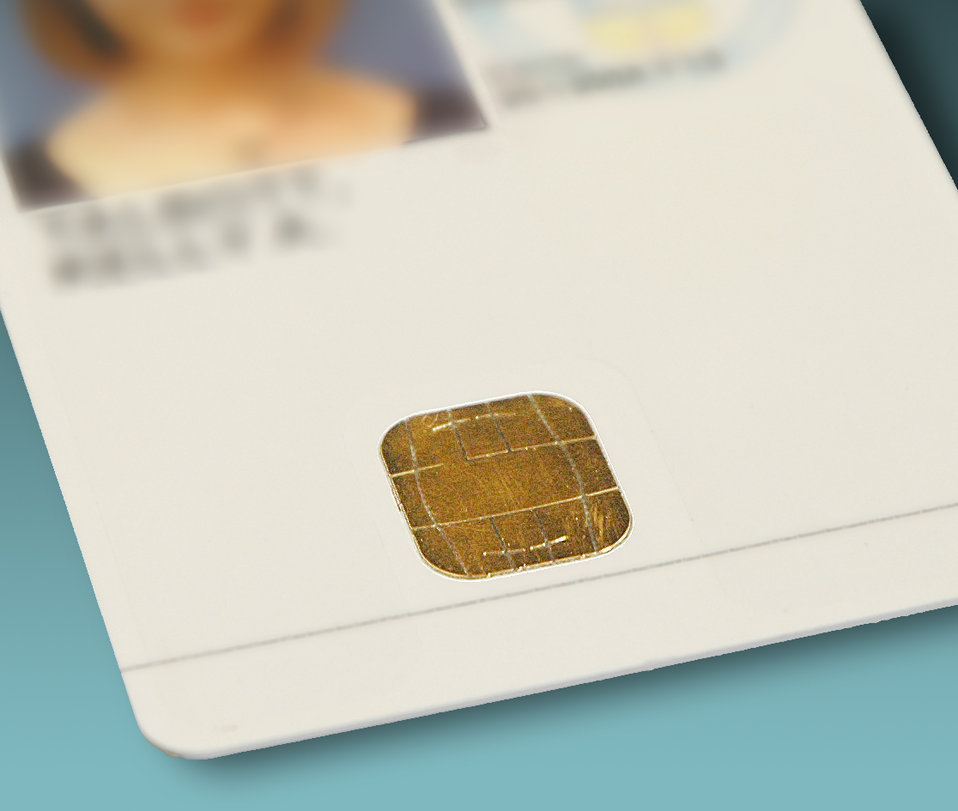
PIV card

This smart chip on a Personal Identity Verification (PIV) card holds two fingerprint biometrics, a unique number that identifies the individual within the PIV system, a PIN number that never leaves the card and a cryptographic key that is used to authenticate the cardholder to the PIV system.